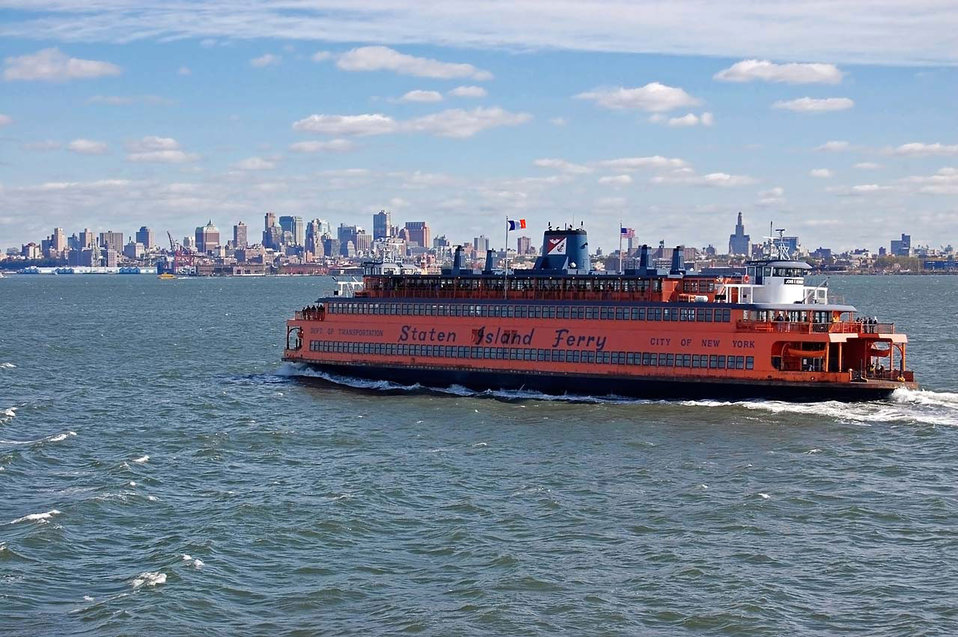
Two islands

Staten island ferry.